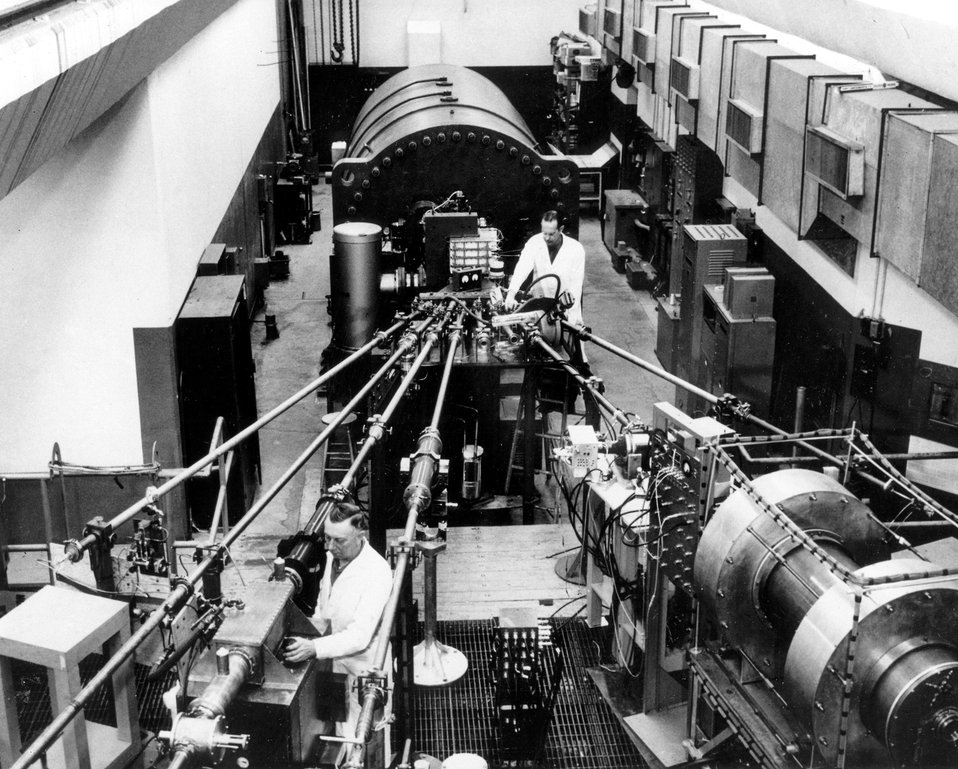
The Van de Graaff accelerator, which produces beams of protons, deutrons (heavy hydrogen nuclei), or alpha particles (helium nuclei) at up to 3 million-electron-volt energies. c. 1962